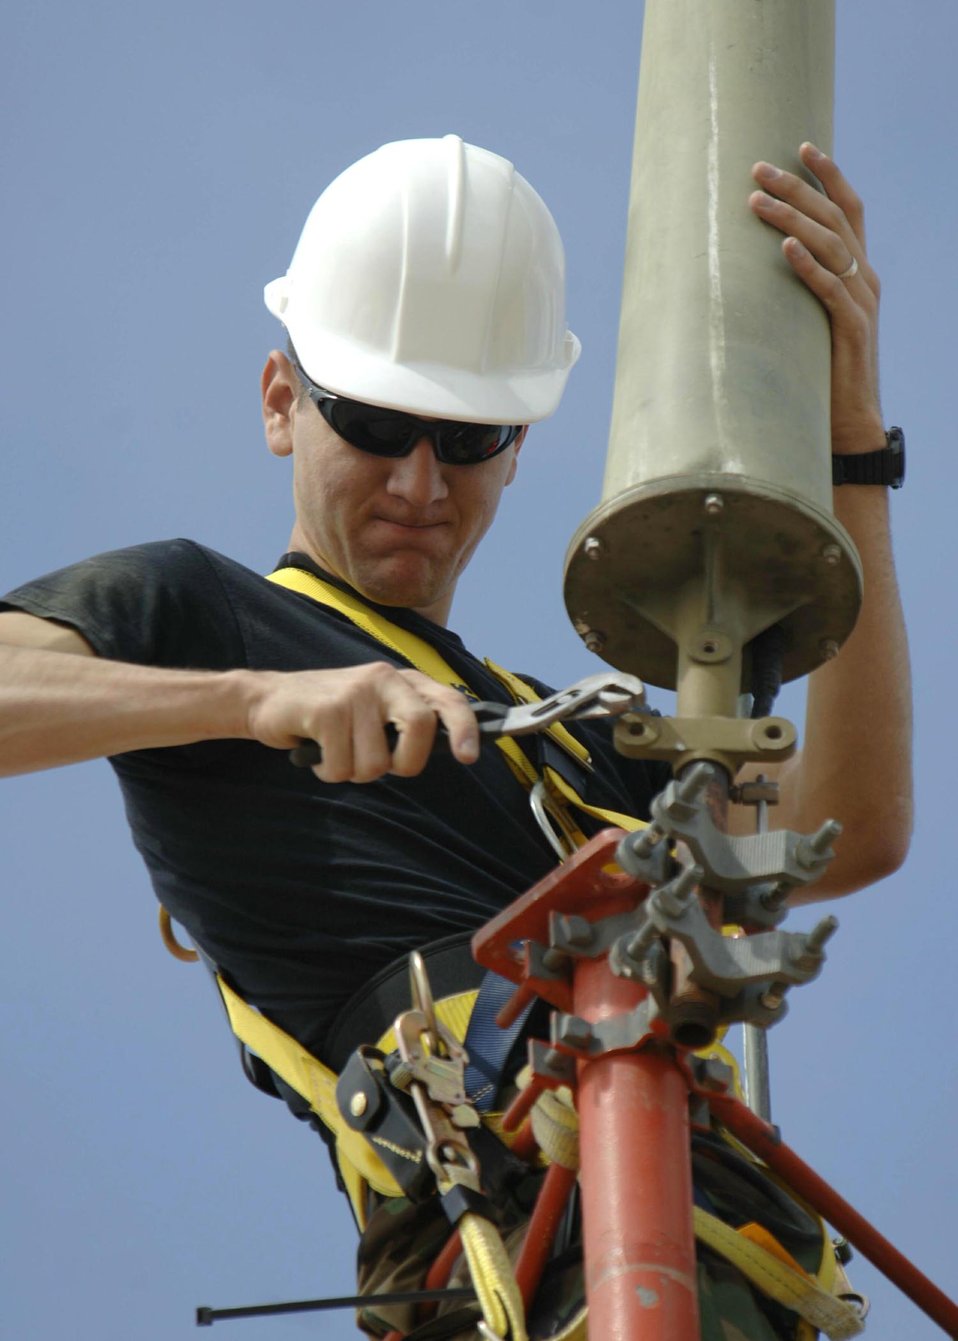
Tower maintenance

Senior Airman Scott Ponte mounts an AS-1181 antenna to the Glideslope antenna tower Wednesday, March 29, 2006 at Davis-Monthan Air Force Base, Ariz. The antenna was remounted to comply with lightning protection standards. It is used to connect a very high frequency radio with the flight check office, to verify calibration and alignment of airfield navigational equipment. Airman Ponte is an airfield systems journeyman with the 355th Communications Squadron.